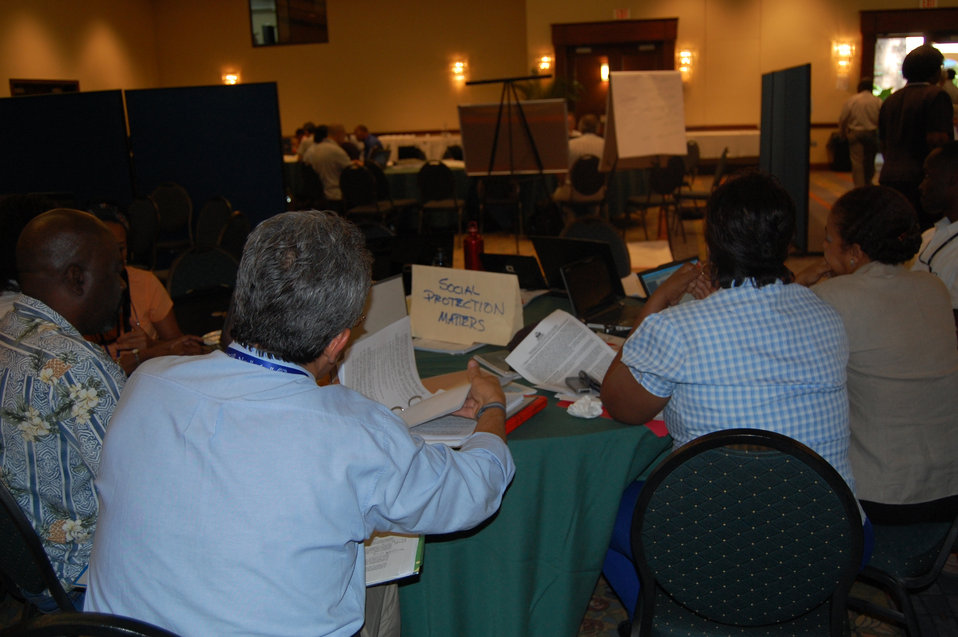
Haiti, One Year Later

Experts from multilateral institutions, NGOs, and donor countries participate in the “Post-Disaster Needs Assessment” to evaluate the amount of damage caused by the earthquake and prioritize the reconstruction and recovery needs.